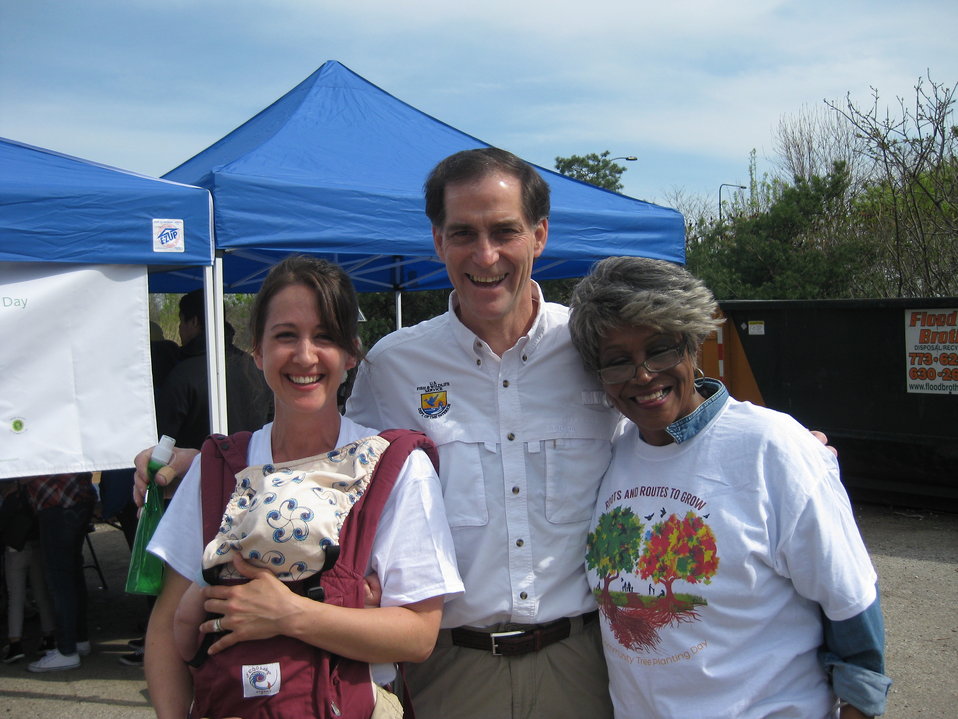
Dan Ashe meets Field Museum Climate Scientist Abigail Derby Lewis and Wild Indigo Fellow Nita Marchant

Chicago Park District Burnham Corridor Community Planting Day
May 10, 2014
Photo by USFWS; Louise Clemency